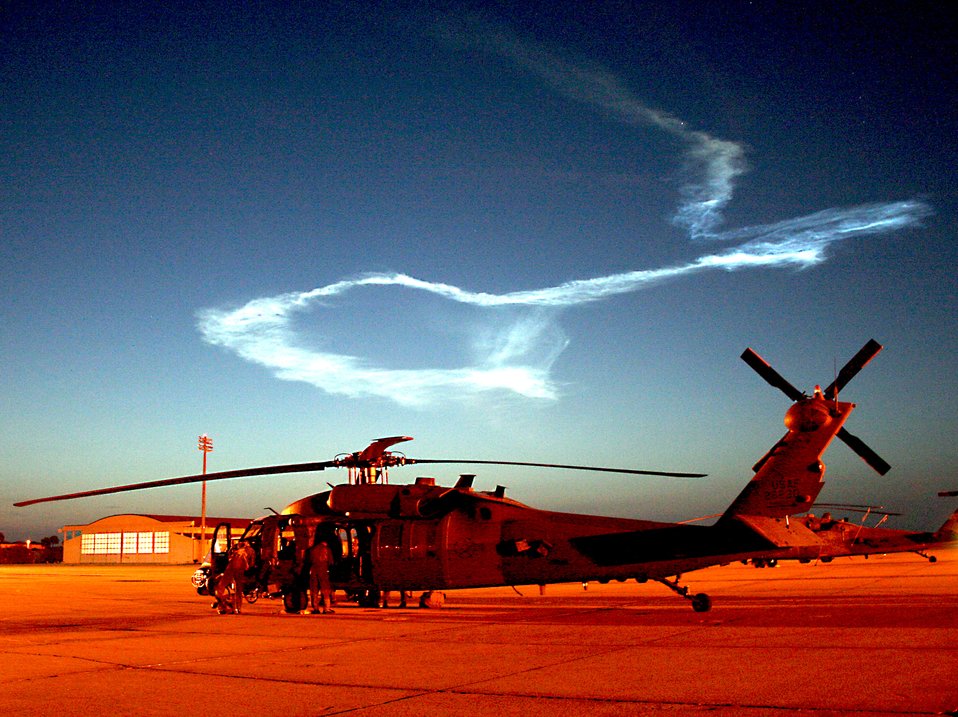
Air Force supports launch of NASA mission to Mars

The crew of a 920th Rescue Wing HH-60G Pave Hawk helicopter conducts post-flight operations after supporting a NASA Delta II rocket launch from Kennedy Space Center just before 5:30 a.m. Aug. 4 at Patrick Air Force Base, Fla. Reservists from the 920th RQW are responsible for clearing the Eastern range before all space shuttle and rocket launches to ensure no boats are in the launch path. The lazy twist of smoke in the early-morning sky is all that remains from the trail left by the rocket, which carried the Phoenix spacecraft on the first leg of its trip to Mars' arctic plain.